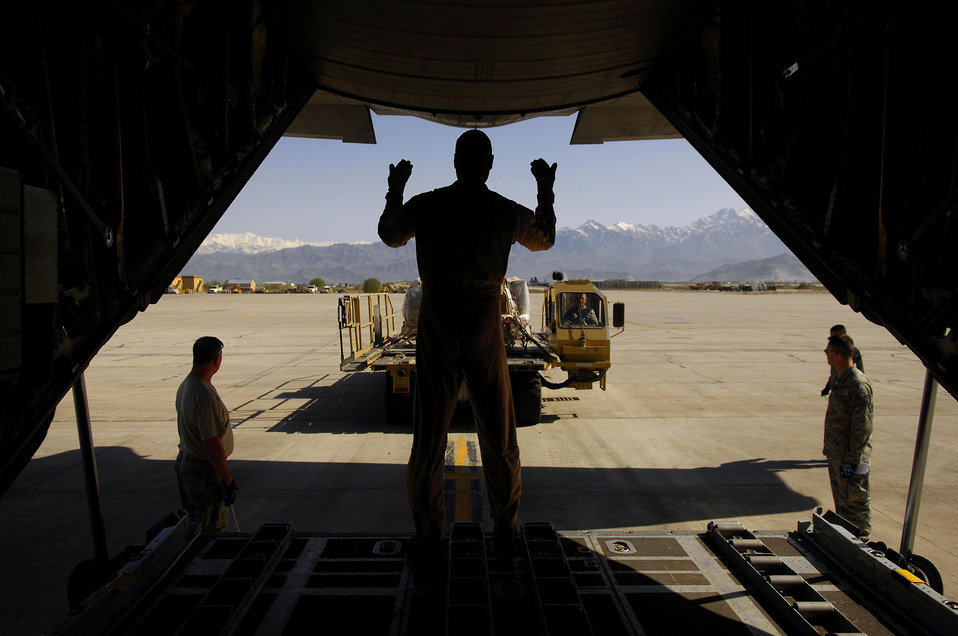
Delivering the goods

Master Sgt. Anthony Harrington directs the cargo to be loaded on a C-130 Hercules during an Operation Enduring Freedom mission April 16 from Bagram Air Base, Afghanistan. Sergeant Harrington is a loadmaster assigned to the 774th Expeditionary Airlift Squadron and deployed from the 109th Airlift Squadron from Minneapolis.